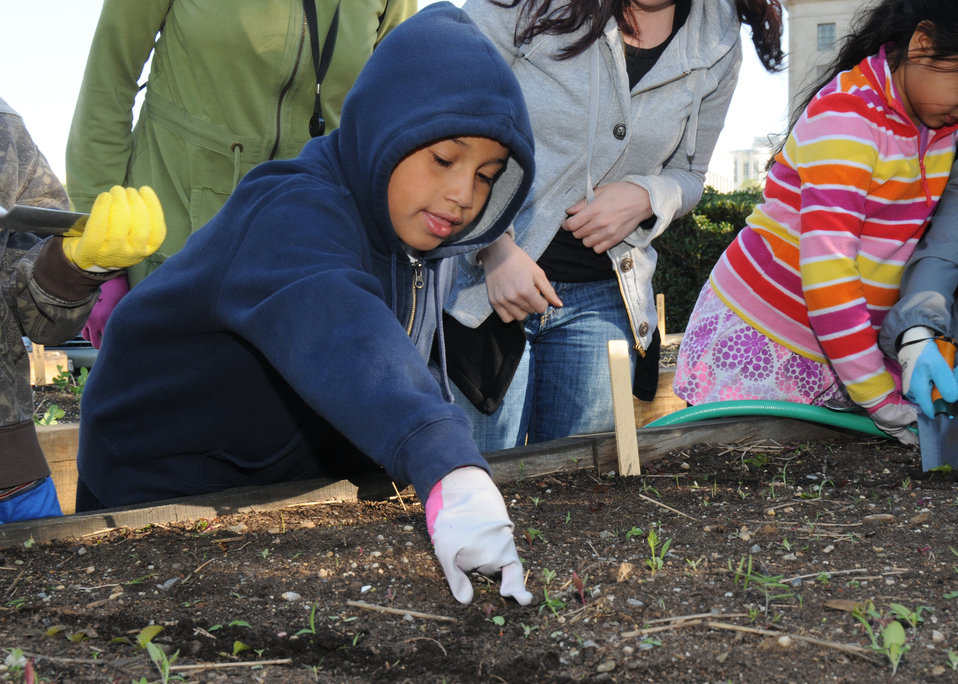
Young people from the non-profit Jubilee Housing organization’s after school youth services program help U. S. Department of Agriculture (USDA) employee’s plant vegetables and herbs in the People’s Garden on Friday, Apr. 9, 2010. The Jubilee Youth Services offers a safe place for learning and fellowship for young people through a supervised after-school program. The after-school program provides academic support, enrichment activities, healthy life skills, teen leadership development and community service opportunities. The young people at Jubilee Housing have their own garden on site. USDA photo 10di1300-132